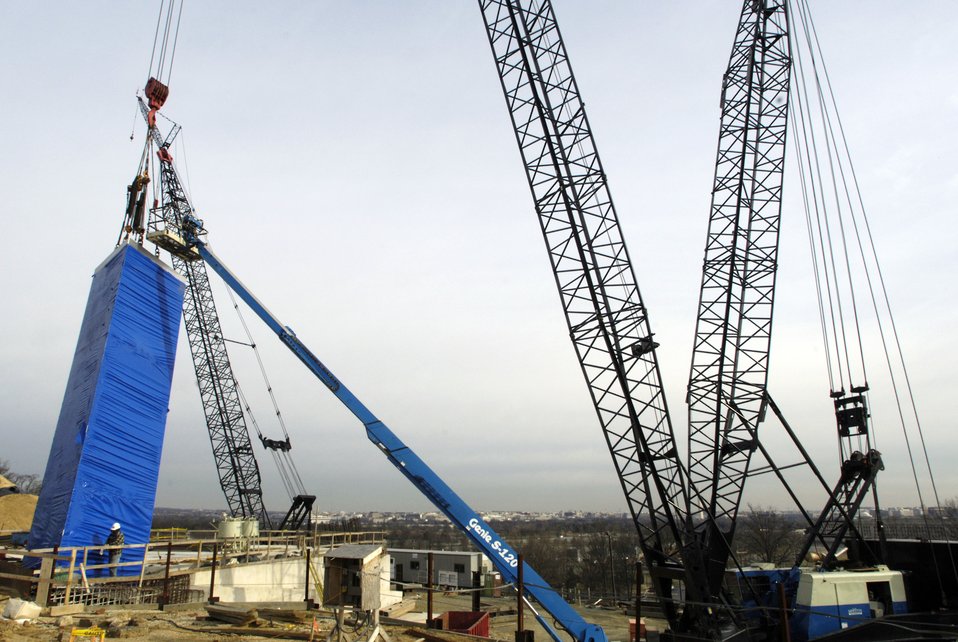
Air Force Memorial

WASHINGTON (AFPN) -- The first 39-foot section of a 279-foot spire is set into place Feb. 10 at the Air Force Memorial. This is the first of 15 sections that will make the three spires of the memorial site near Arlington National Cemetery. Dedication ceremonies are scheduled Oct. 13.